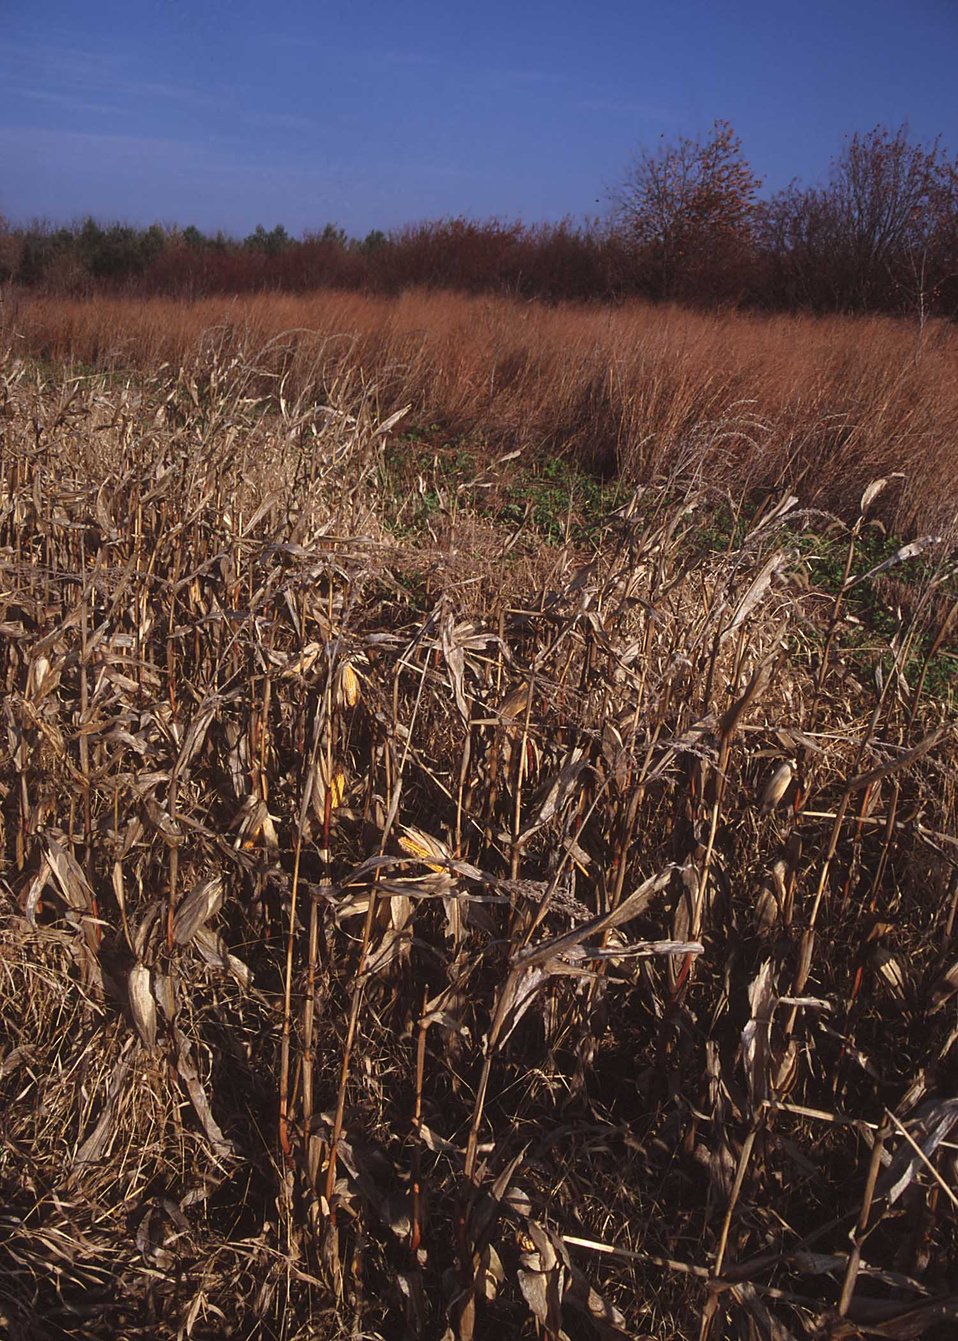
Leaving a few rows of unharvested corn or other grain near good wildlife cover adds to habitat for a number of species of wildlife.